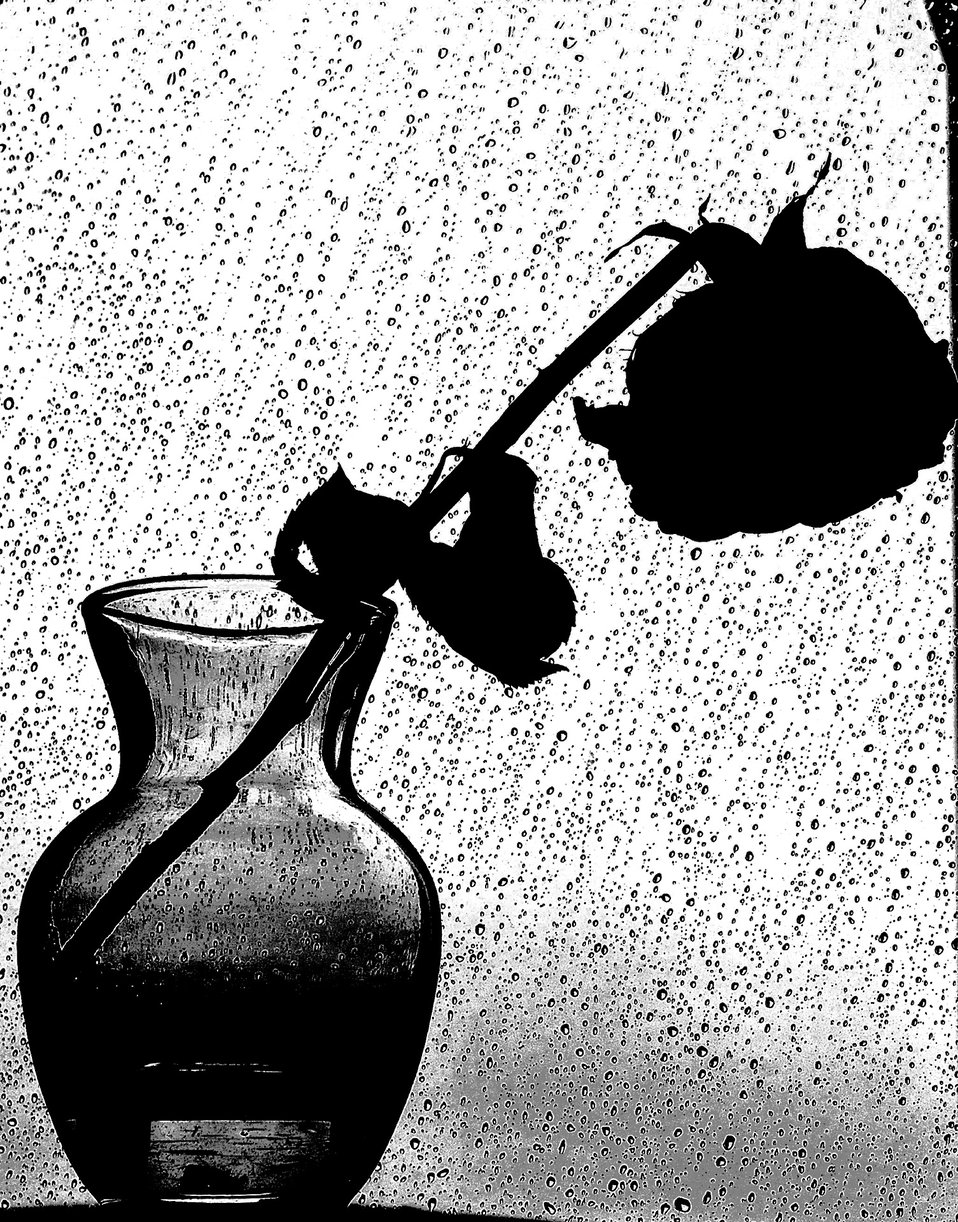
Dead roses and raindrops.